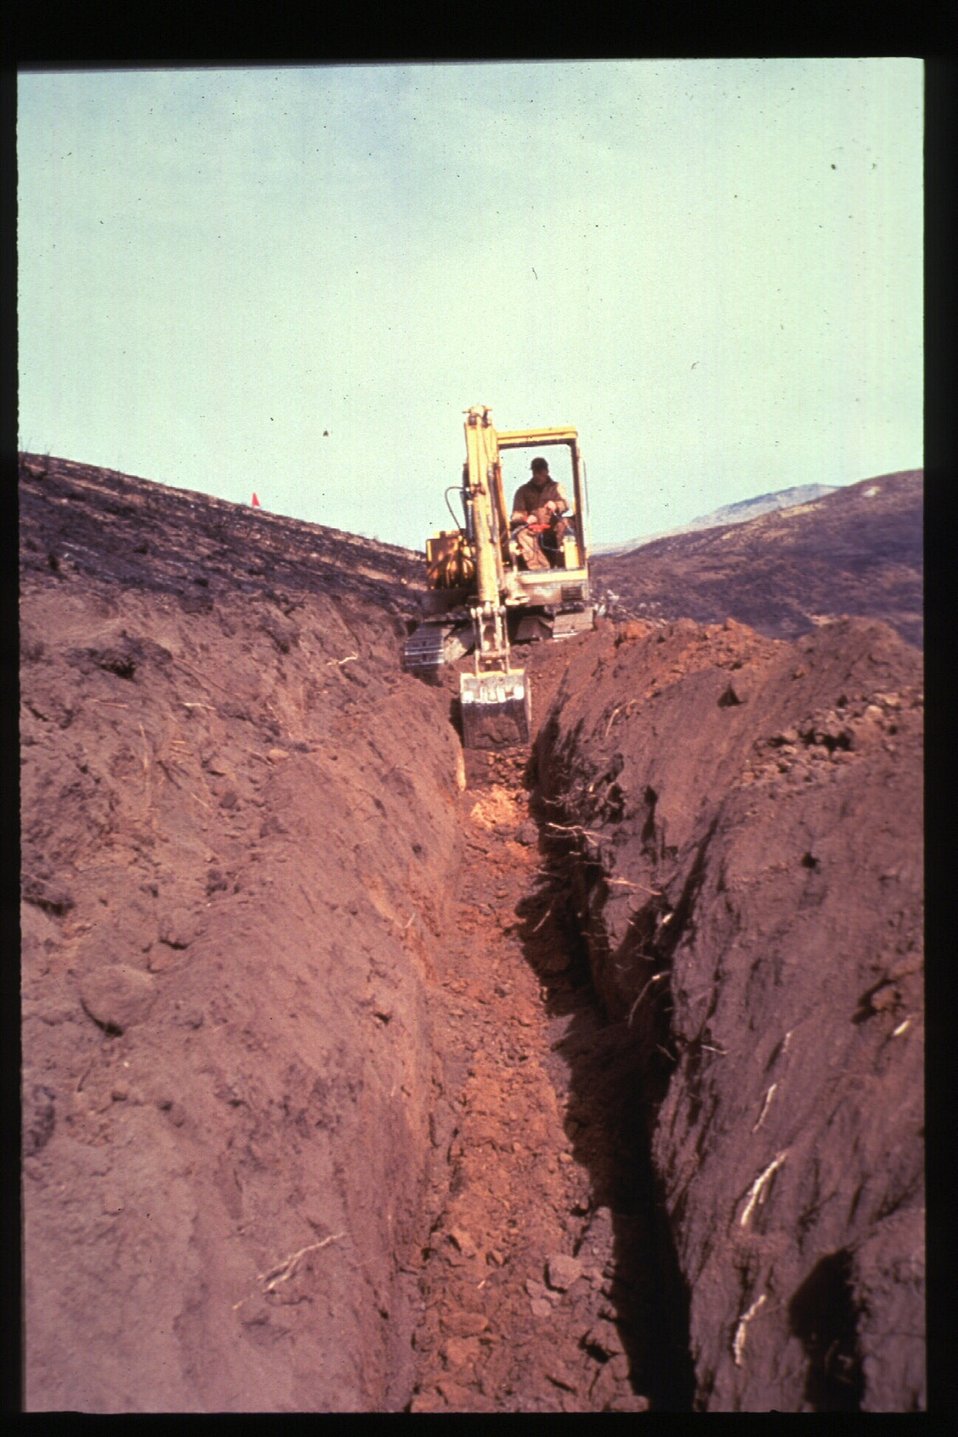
8th Street Fire Trench digging Four Rivers Field Office LSRD Lower Snake River District